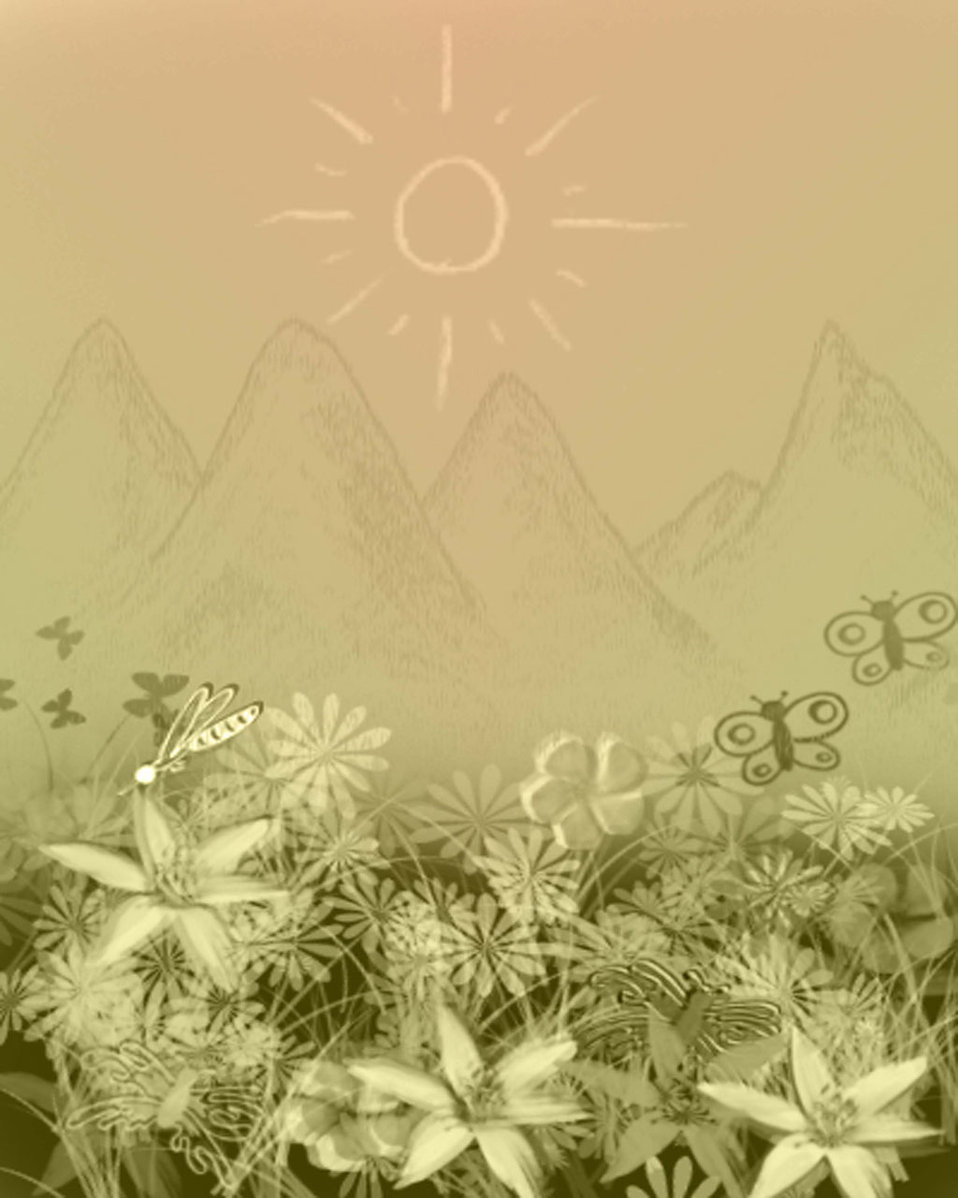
Flower garden

Painting of a flower garden.